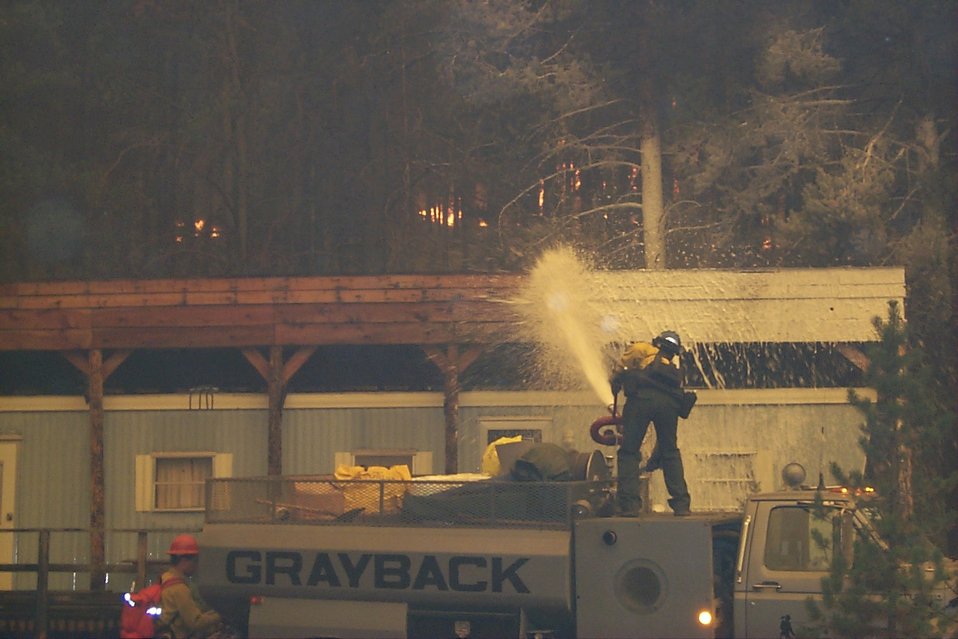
Fire retardant measures Urban interface Fire Clearwater Fire Salmon Field Office USRD Upper Snake River District